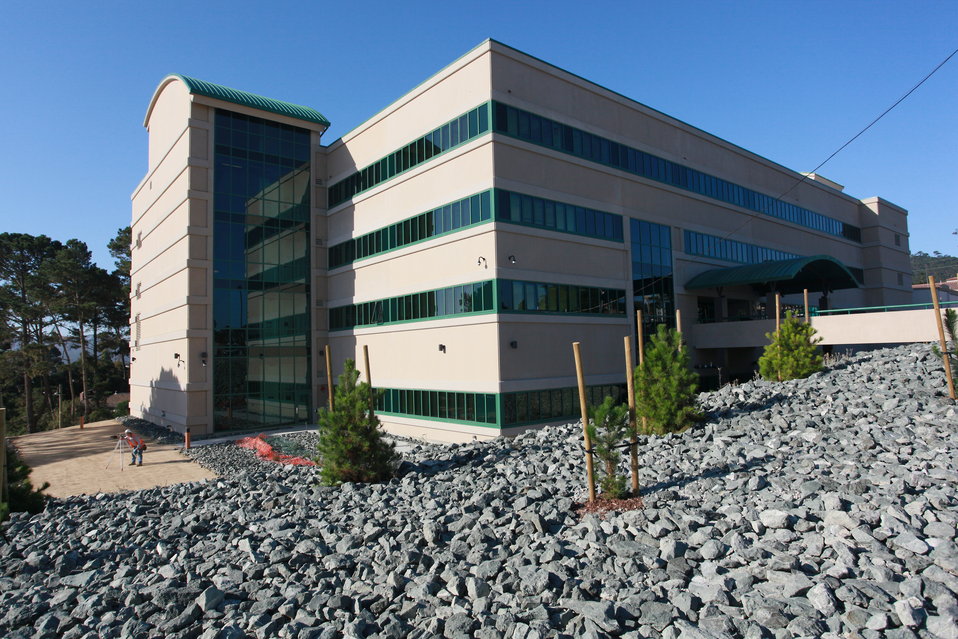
MONTEREY, Calif. (Sept. 21, 2010) - Rising above the hills of the Presidio of Monterey is the Defense Language Institute’s new general instruction building (GIB), completed in September by the U.S. Army Corps of Engineers Sacramento District. The $28 million building will house 60 classrooms for military students learning foreign languages, the first of three scheduled for Corps construction to accommodate the growing Defense Language Institute.